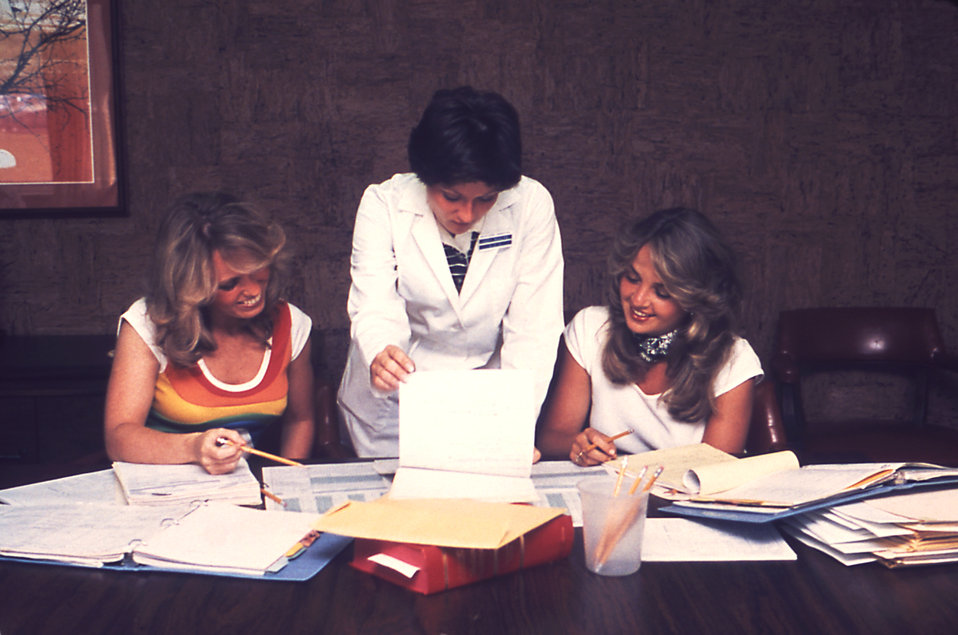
CDC staff members are collecting data at Doctor's Hospital, Tucker, Georgia, 1977.